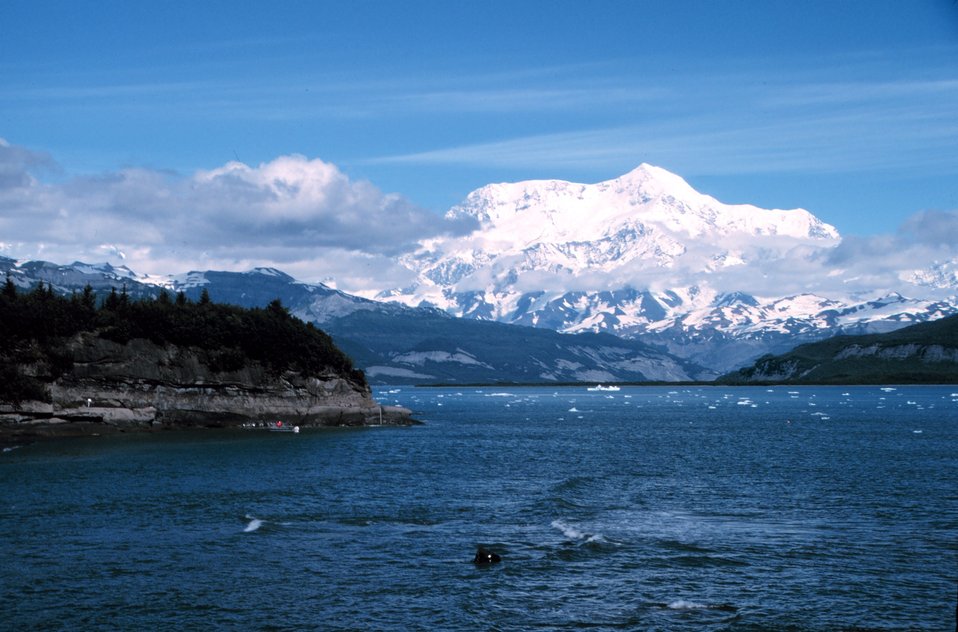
Photo #6 of Mount St. Elias sequence. Mount Saint Elias is one of the largest mountains visible from the sea on the North American continent. It rises to a height of 18,008 feet in a distance of less than 20 miles from sea level at Icy Bay.